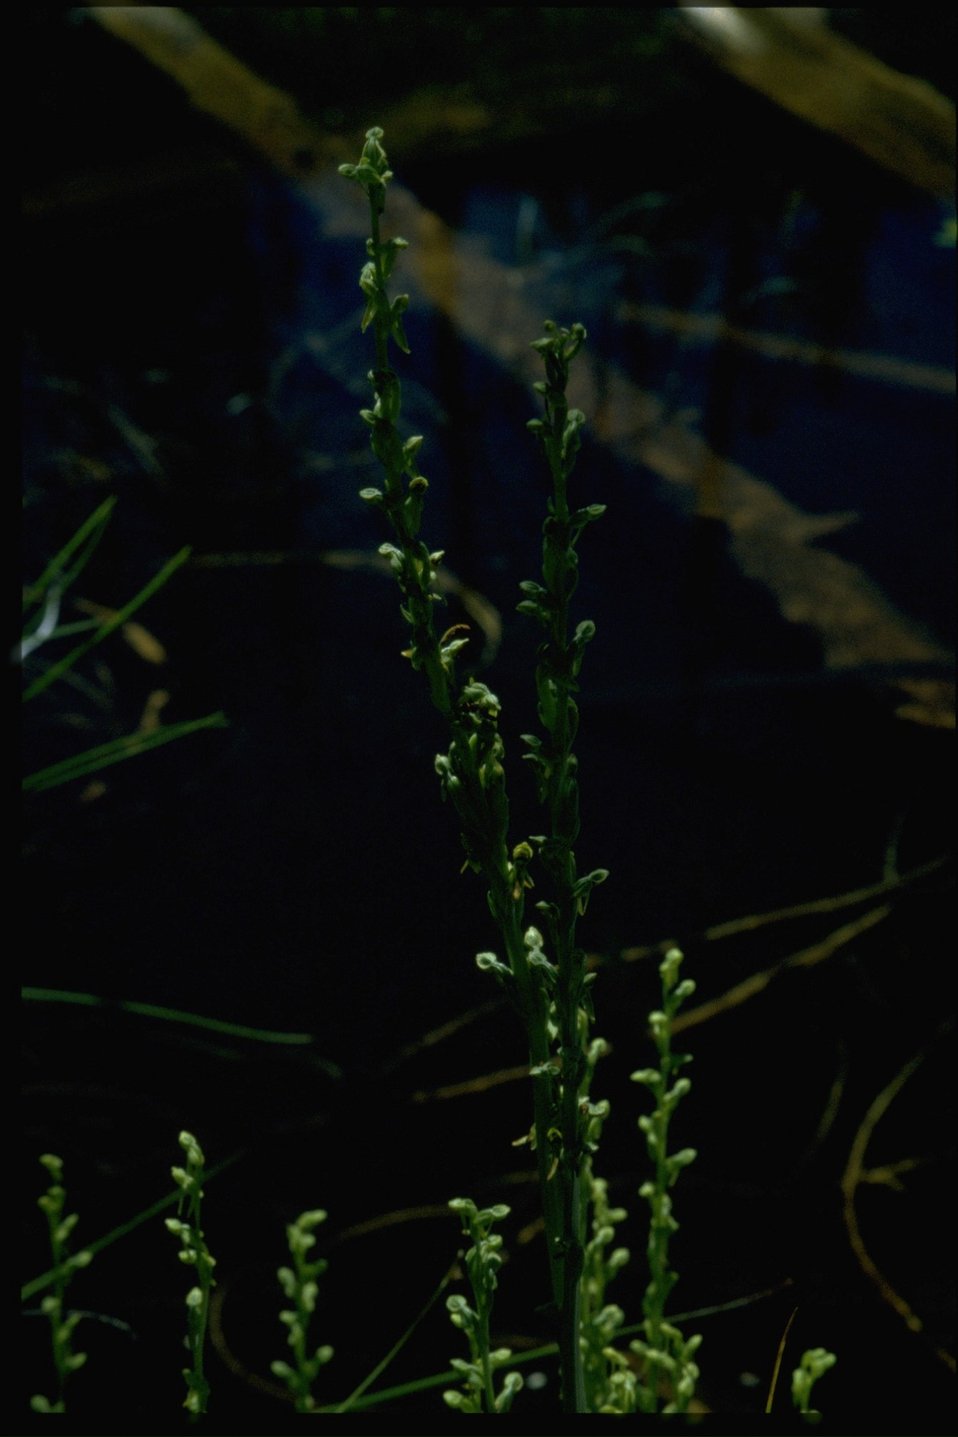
Medium shot of Platanthera sparsiflora.